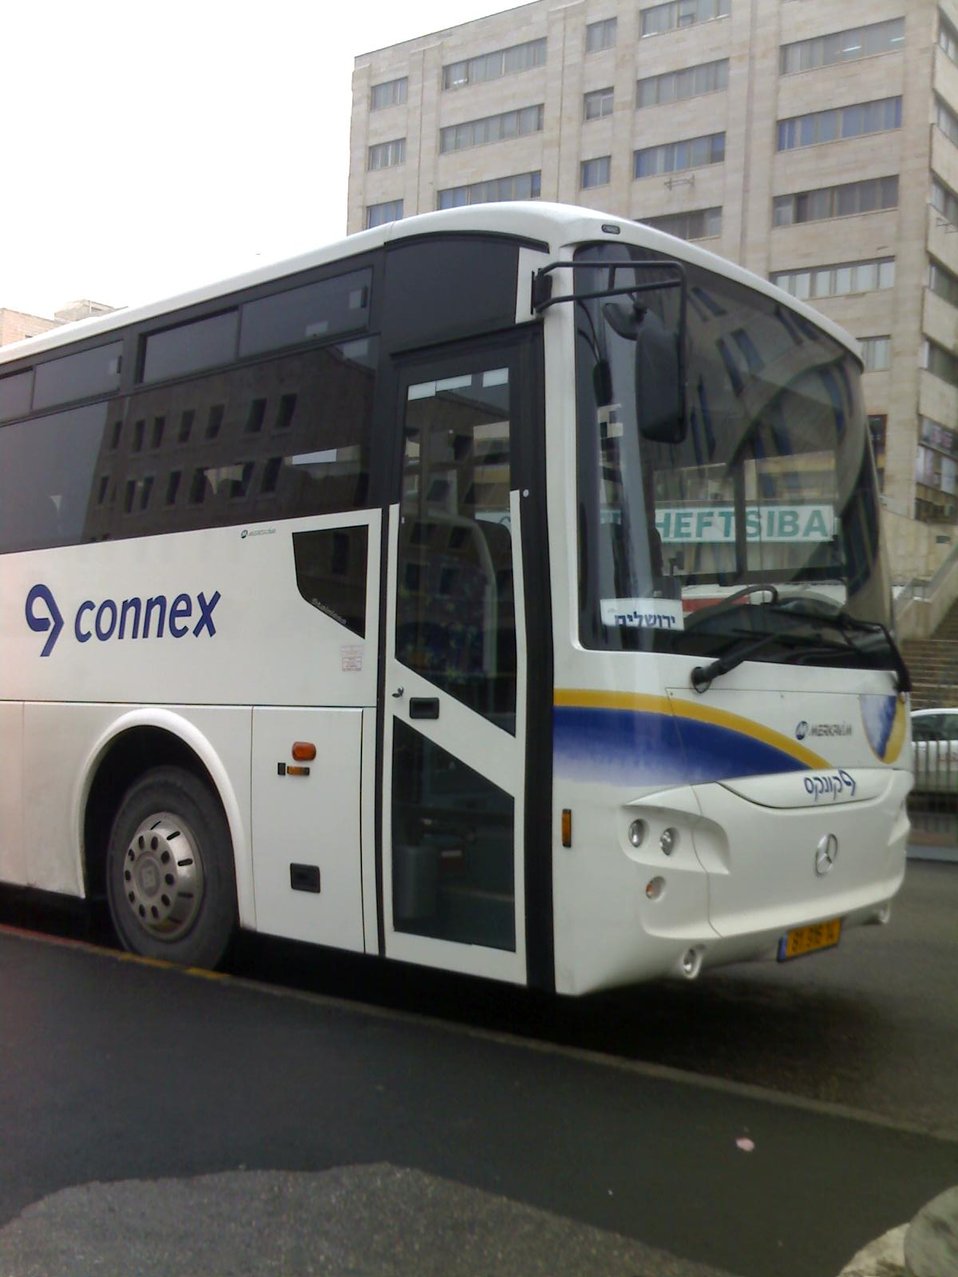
עברית: אוטובוס של חברת קונקס בארץ